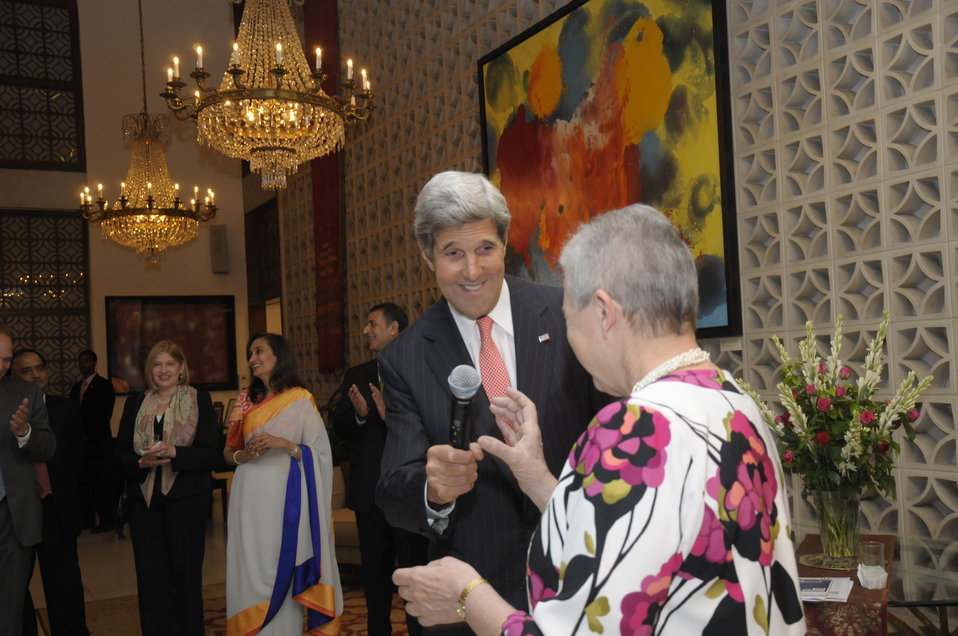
Secretary Kerry Addresses Guests at a Business Leaders Dinner

U.S. Secretary of State John Kerry passes the microphone to U.S. Ambassador to India Nancy Powell during in a business leaders dinner at the Roosevelt House, the residence of the U.S. Ambassador, in New Delhi, India on June 23, 2013.